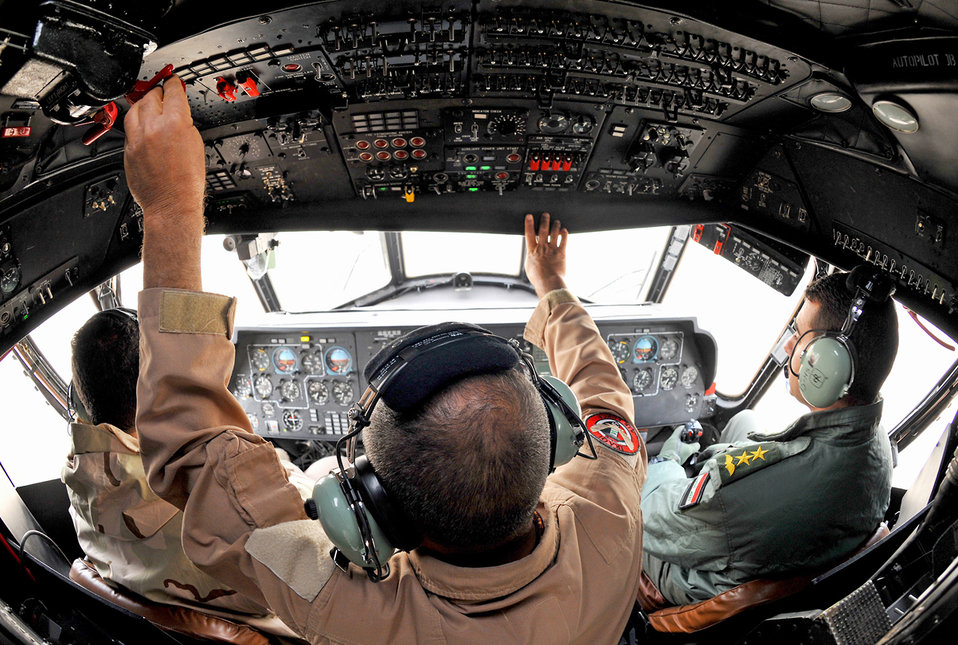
721st AEAS

Iraqi Army Aviation Command pilots prepare to fly an Mi-17 helicopter Dec. 14, 2010, in Taji, Iraq. The Mi-17 is one of several helicopters that the AAC has at Taji. Air advisers with the 721st AEAS work with AAC members at Taji to advise and assist them in building a safe, self-sustaining Iraqi rotary-wing force.